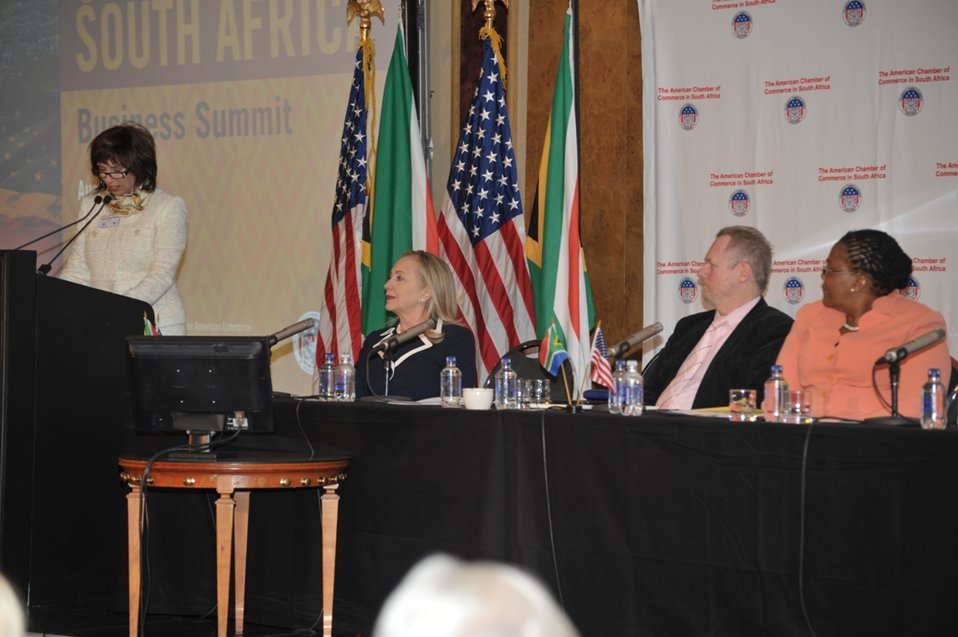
AmCham South Africa President Oosthuizen Introduces Secretary Clinton

AmCham South Africa President Donna Oosthuizen introduces U.S. Secretary of State Hillary Rodham Clinton at the U.S.-South Africa Business Partnership Summit in Johannesburg, South Africa, on August 6, 2012.